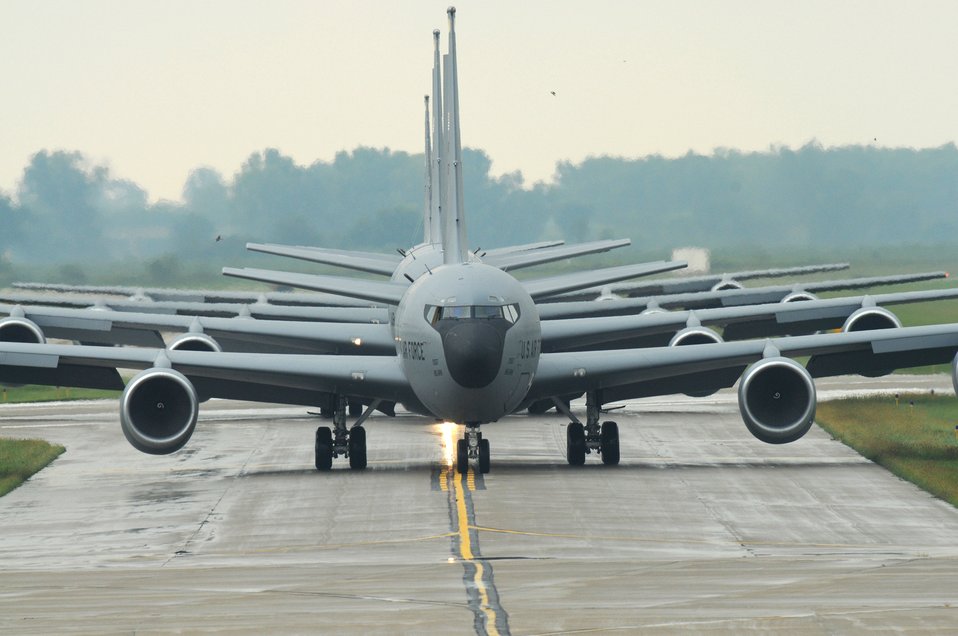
Ready for take-off

A group of KC-135 Stratotankers from the Iowa Air National Guard's 185th Air Refueling Wing taxi before leaving their home base Sept. 3, 2009, at Sioux City regional airport. The aircraft are departing for a local air refueling mission.